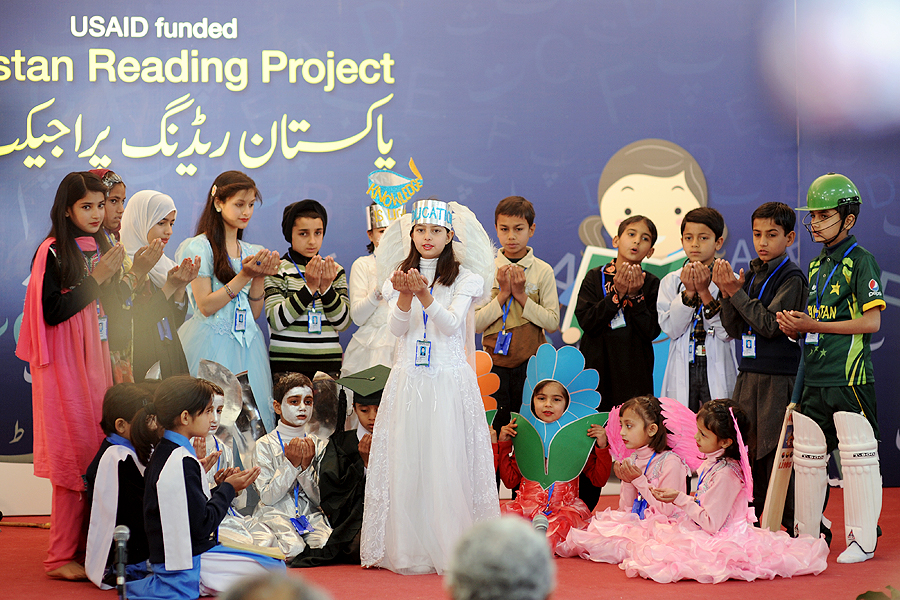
United States and Pakistan Launch the Pakistan Reading Project